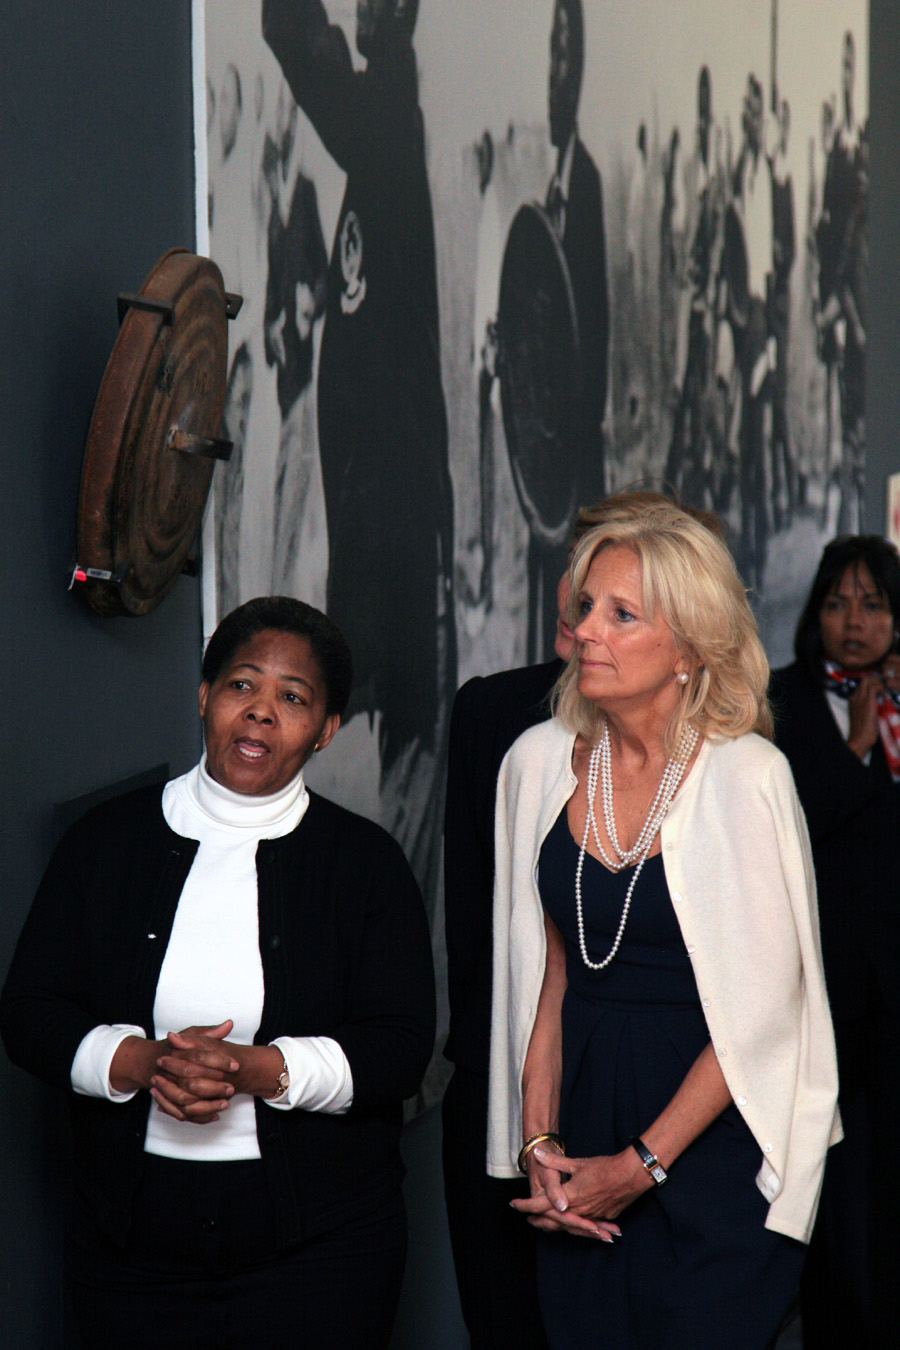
Dr. Jill Biden Visits Hector Pieterson Museum

Dr. Jill Biden, wife of Vice President Joseph Biden, visits the Hector Pieterson Museum in Soweto, South Africa, on June 12, 2010.